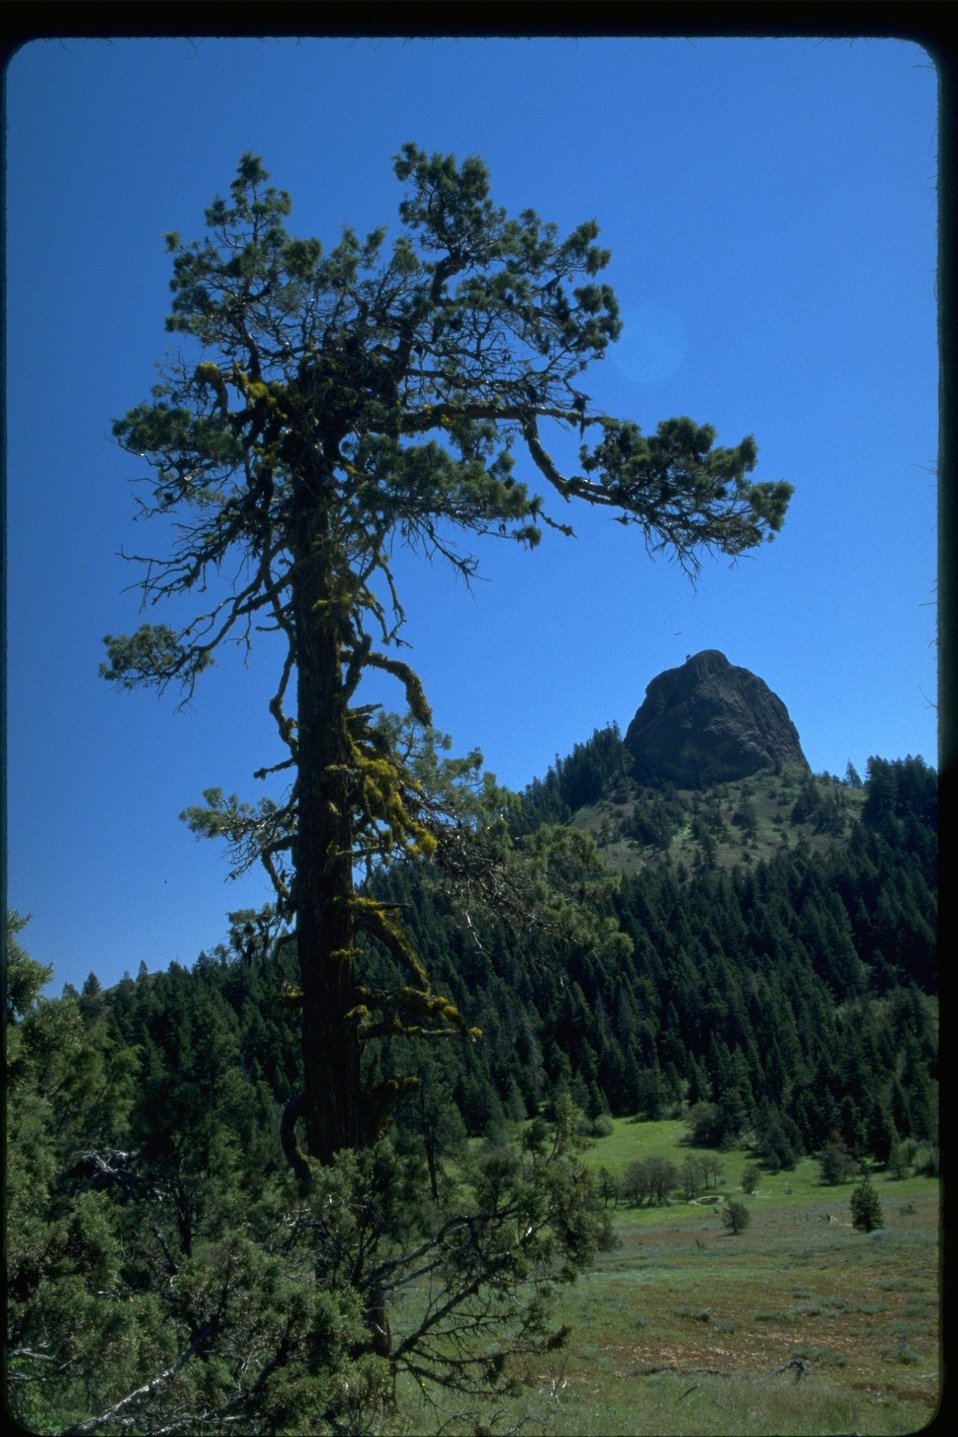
Pilot Rock from wildflower meadow Cascade-Siskiyou National Monument (CSNM).